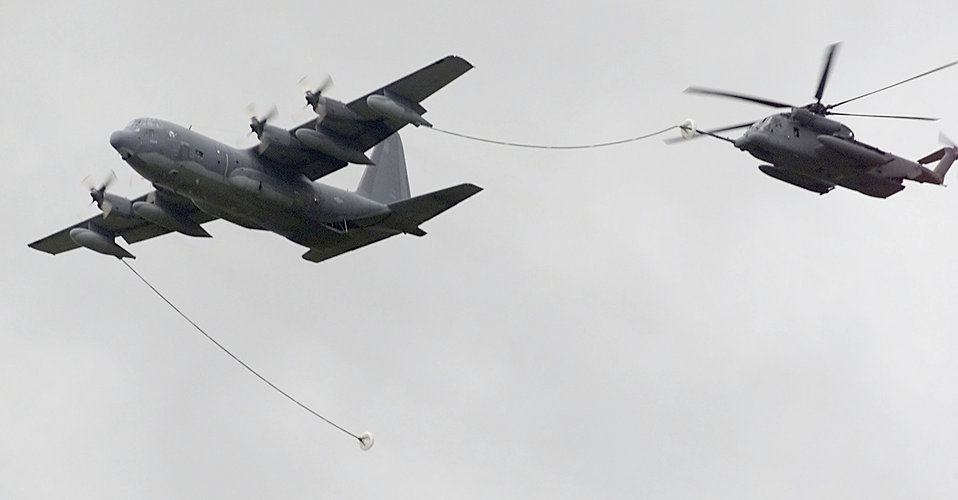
Thirsty Pave Low

OVER SOUTH AFRICA -- An MH-53M Pave Low IV helicopter from the 21st Special Operations Squadron, refuels from an MC-130P Combat Shadow from the 67th Special Operations Squadron. Both Squadrons are from Royal Air Force Mildenhall, England, and deployed to Air Force Base Hoedspruit, South Africa, to support Operation Atlas Response.